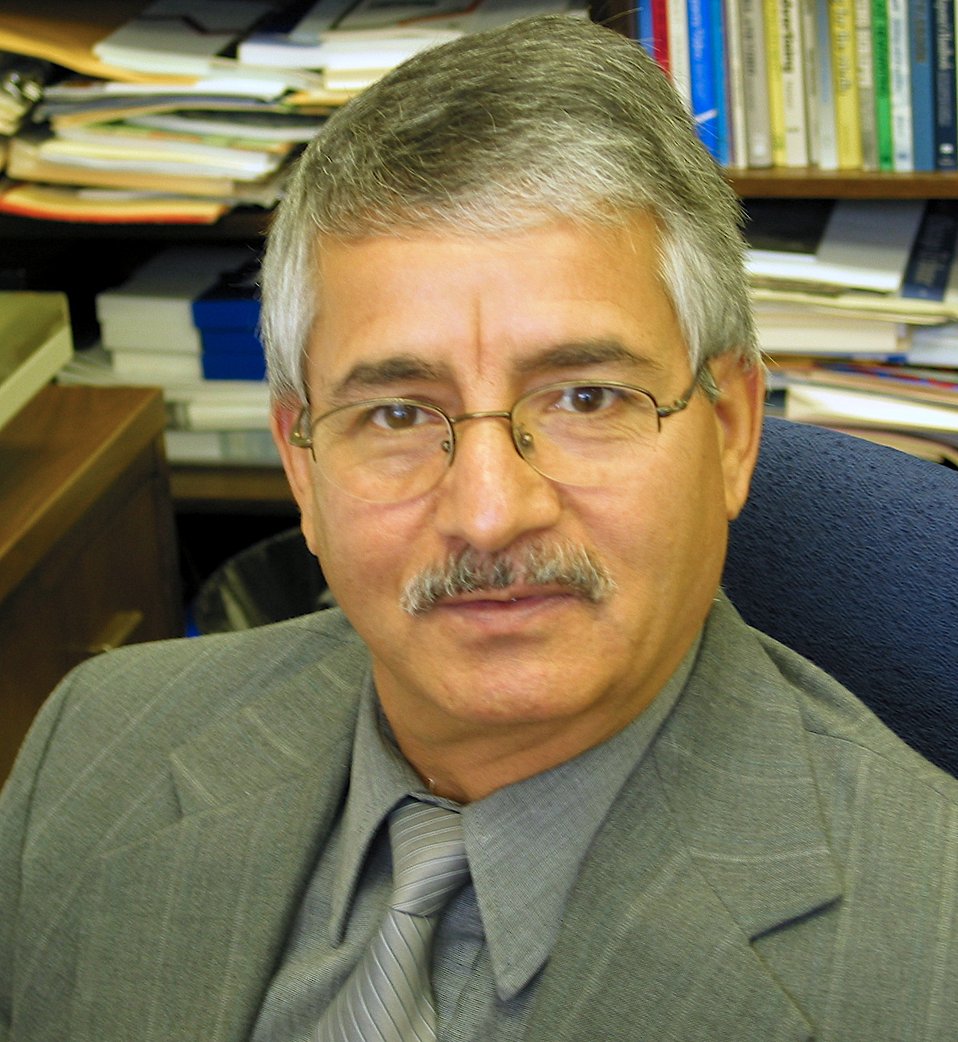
Yahya R. Kamalipour, 2005